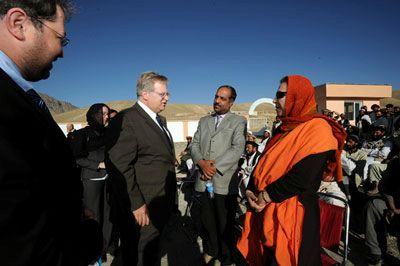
Assistant Secretary Schwartz Speaks With Local Officials

U.S. Assistant Secretary of State for Population, Refugees, and Migration Eric Schwartz speaks with local officials at the inauguration of a U.S. government-sponsored health clinic at a refugee reintegration program site near Kabul, Afghanistan, on October 10, 2010. Assistant Secretary Schwartz then traveled to Afghanistan from October 10-12, 2010. He began with a visit to a rural village comprised primarily of returnees, where U.S. funds have supported a healthcare facility that will now be run by the Afghan Ministry of Public Health. In Mazar-e-Sharif, he visited a government-provided land allocation site for returnees, as well as a center for Afghan women returnees focused on literacy training, heath education, rights awareness and cultural studies. In Kabul, he toured the Orthopedic Hospital run by the International Committee for the Red Cross.